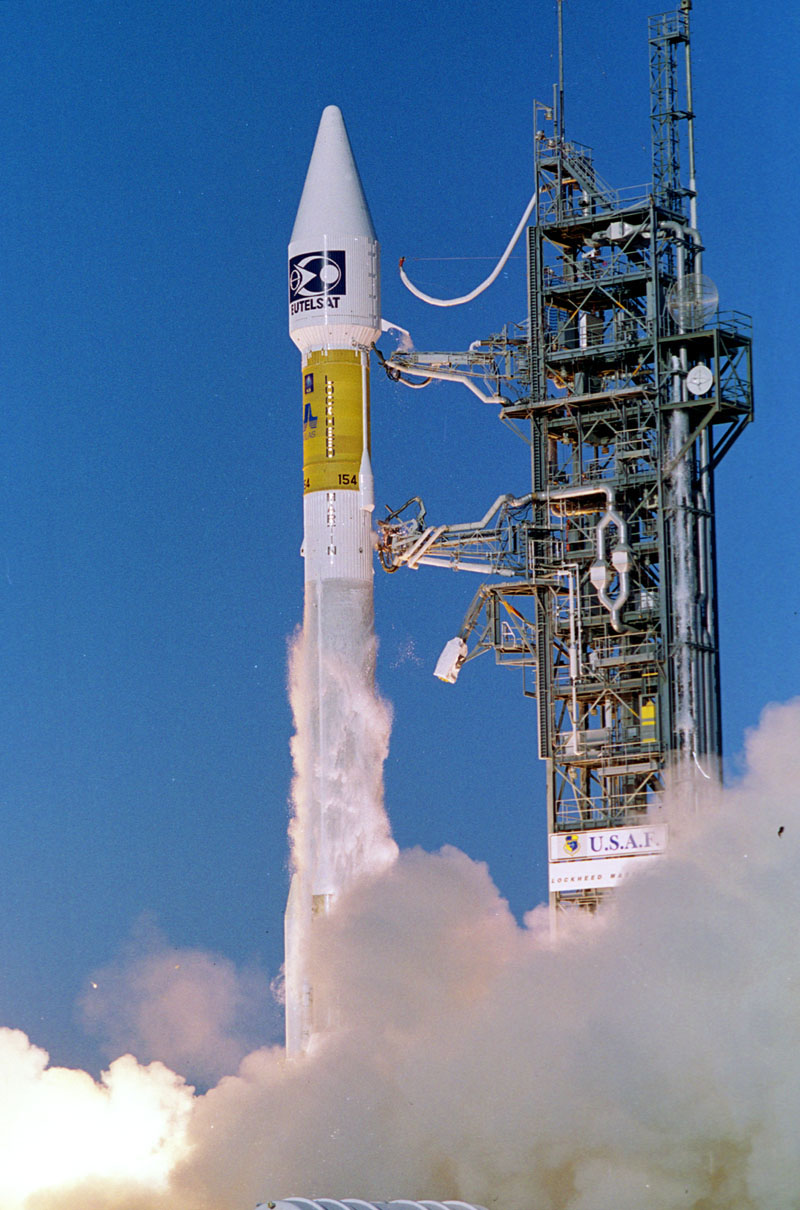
Atlas IIAS

CAPE CANAVERAL AIR FORCE STATION, Fla. -- A Lockheed Martin Astronautics Atlas IIAS rocket successfully launched the European W3 communication satellite into geosynchronous transfer orbit April 12, 1999. It was the second successful Atlas launch of 1999 from Cape Canaveral and the 43rd consecutive successful flight. The Atlas IIAS, designated AC-154 for the W3 mission, is one of two Atlas II family configurations presently launching satellites for commercial and government customers worldwide. The Atlas II series, including the II, IIA and IIAS, has achieved 100 percent operational success since the introduction of each launch vehicle.